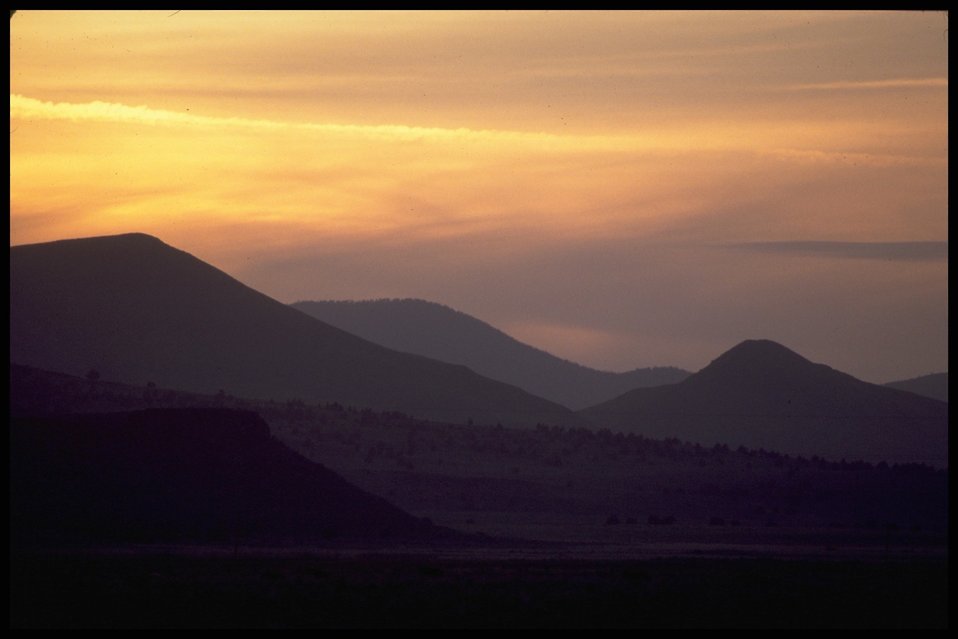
Lakeview District sunset.